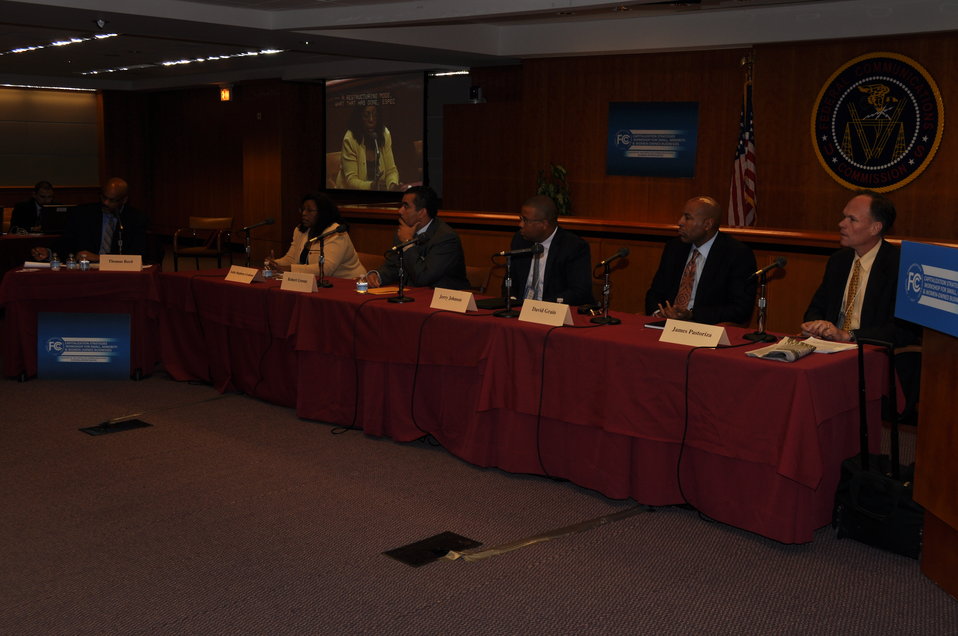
Capitalization Strategies

Workshop for small, minority and women owned businesses. Hosted by the Office of Communications Business Opportunities